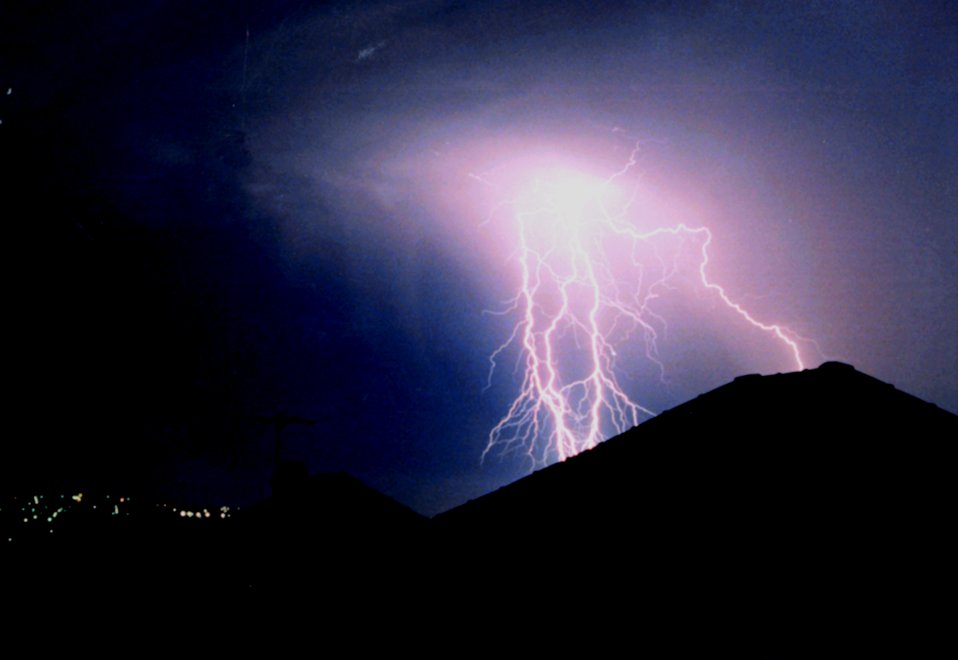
Many of Mr. Lear's lightning photographs are taken from the roof of his home. He has an array of six cameras that can be activated simultaneously in order to capture lightning images. These six cameras span the horizon. Mr. Lear is a welder by trade and has taken lightning photographs for many years as a hobby.